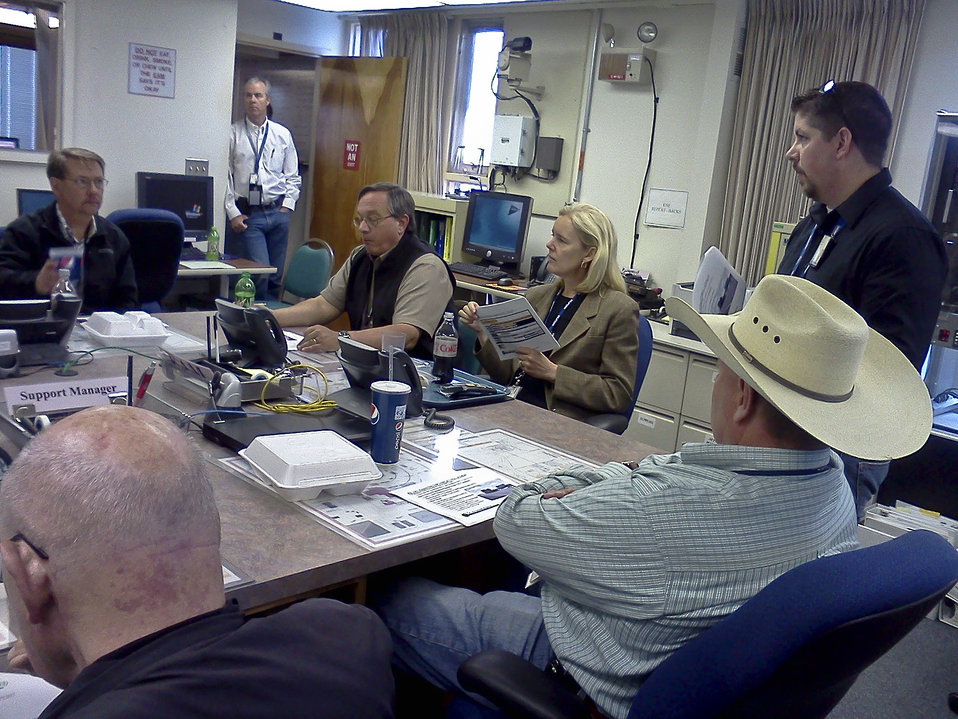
EMAB on Idaho visit

Principal Deputy Assistant Secretary for Environmental Management Tracy Mustin listens to a briefing from DOE Idaho Operations personnel.